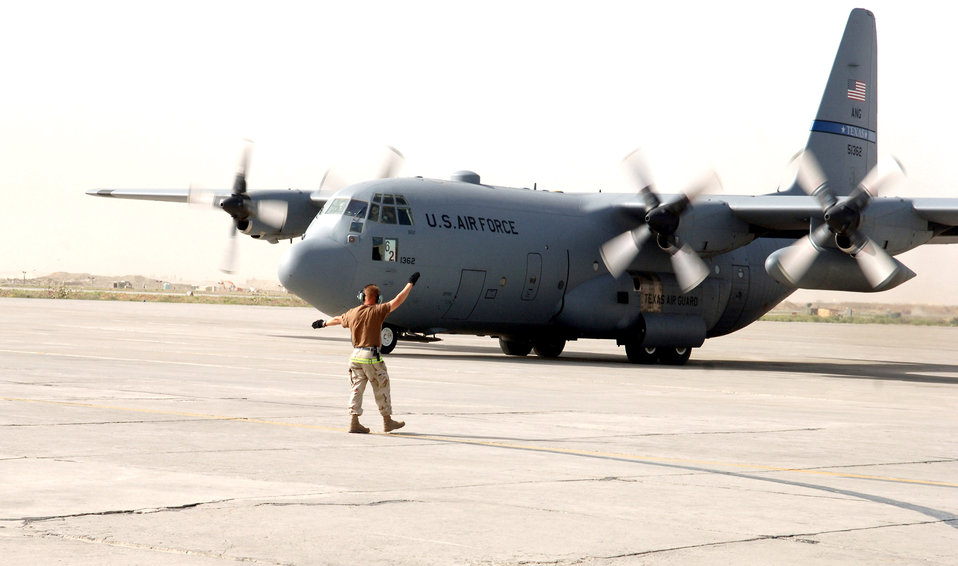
C-130Maintainers

Tech. Sgt. Dale Durham marshals in a C-130 Hercules on the ramp at Bagram Air Base, Afghanistan, on Wednesday, May 31, 2006. Sergeant Durham is with the Texas Air Natioanl Guard's 136th Airlift Wing in Fort Worth.